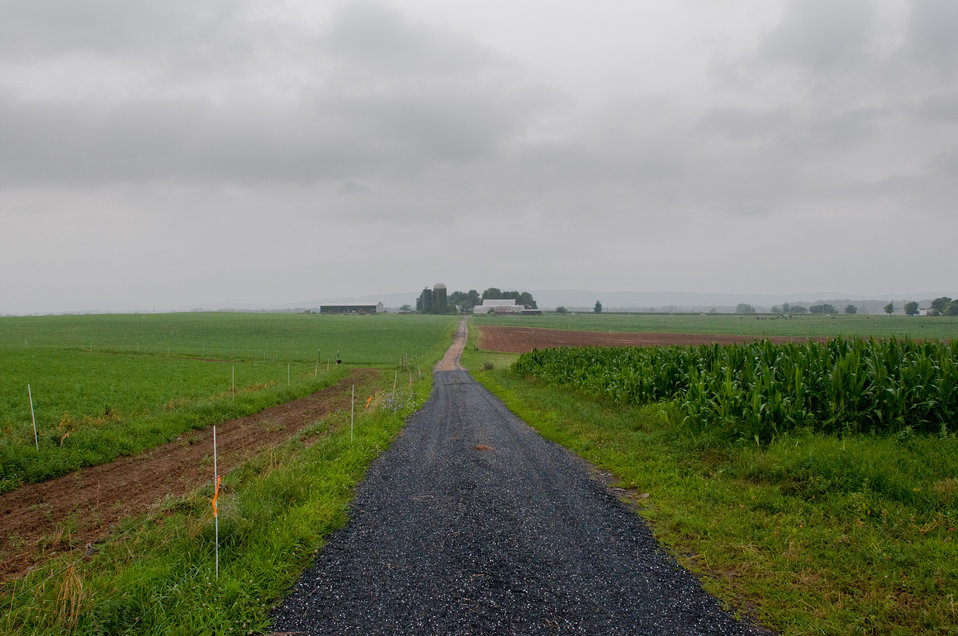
Nick’s Organic Farm, in Adamstown, MD, on Friday, July 12, 2013. The farm, owned by Nick Maravell, produces Black Angus beef, chicken, turkey, eggs, hay, soybeans, corn, alfalfa, orchard grass, rye; and other crops. The cattle are100% grass-fed receiving certified organic pasture, certified organic hay (in winter), water and mineral salts mixed with sea kelp. The cattle are not fed hormones, antibiotics or animal products. Poultry feed from grain is ground from organic grain. The poultry also graze on organic pastures. The farm has conducted on-farm research with federal, state and non-profit agencies to refine organic practices.